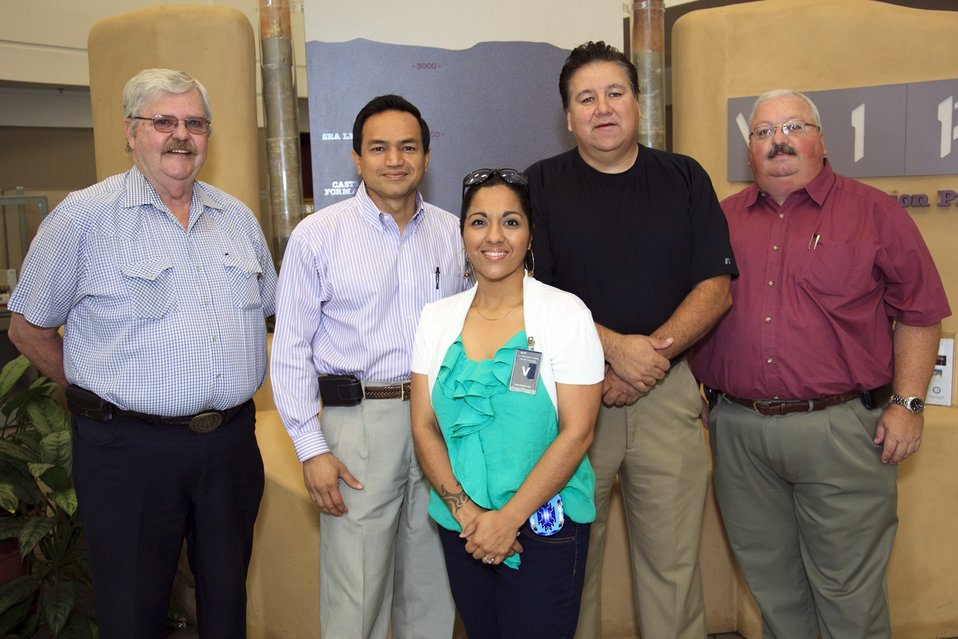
Emergency Response Training

Two Shoshone-Bannock Tribes (SBT) officials are visiting the Department of Energy (DOE) Carlsbad Field Office (CBFO) and Waste Isolation Pilot Plant (WIPP) near Carlsbad, New Mexico, June 12-13, 2012, for emergency response training provided by WIPP. They were greeted on arrival at the CBFO, which has a cooperative agreement with the SBT, in-town offices and paused for a photo. From left to right are: CBFO National Transuranic (TRU) Program (NTP) Institutional Affairs Manager Bill Mackie; Washington TRU Solutions LLC, the WIPP management and operating contractor, President and General Manager Farok Sharif; SBT Public Affairs Manager Randy’L Teton; SBT Executive Director Angelo Gonzales; and CBFO NTP Director J.R. Stroble. The SBT are located on the Fort Hall Reservation in Southeastern Idaho. Of special note, Teton is the woman whose image is used on the Sacagawea, the Shoshone woman who was the guide and interpreter for the Lewis and Clark expedition, U.S. dollar coin, first minted in 2000. The WIPP training they are receiving includes preparing for emergency situations on the reservation that may require activating the emergency operations center and needs to inform the public. Since 1988, through the WIPP States and Tribal Education Program, more than 31,000 emergency response professionals along WIPP routes have been trained. Since opening in 1999, WIPP drivers have logged more than 12.6 million safe loaded miles without a serious accident or injury.